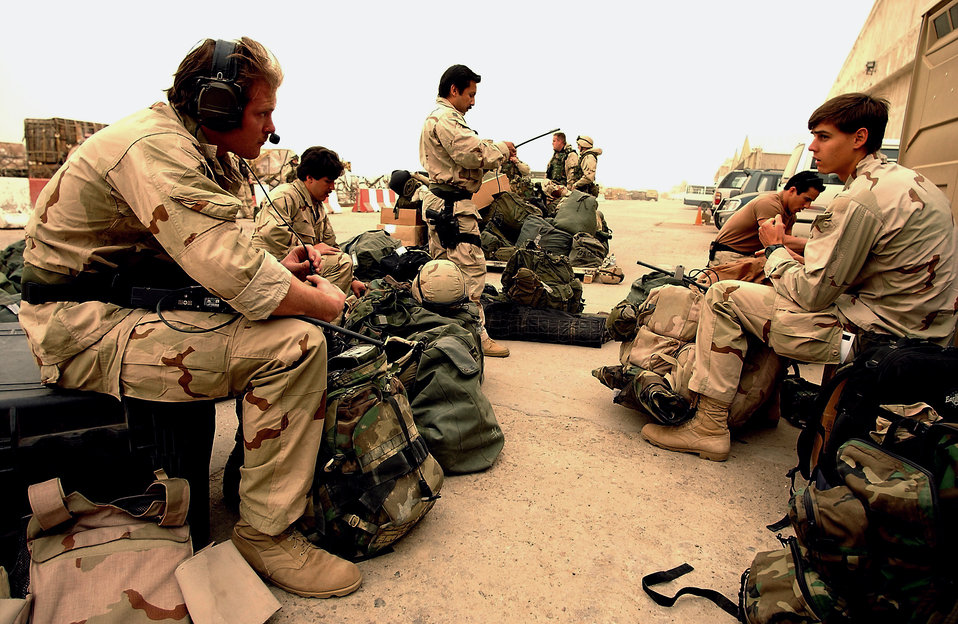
Combat controllers

OPERATION IRAQI FREEDOM -- Senior Airman Nate, Staff Sgts. Mike and Sal, and Capts. Justin and Jay, combat control pararescuemen and officers, perform operational readiness checks on their equipment before deploying to an undisclosed location in support of Operation Iraqi Freedom March 27.